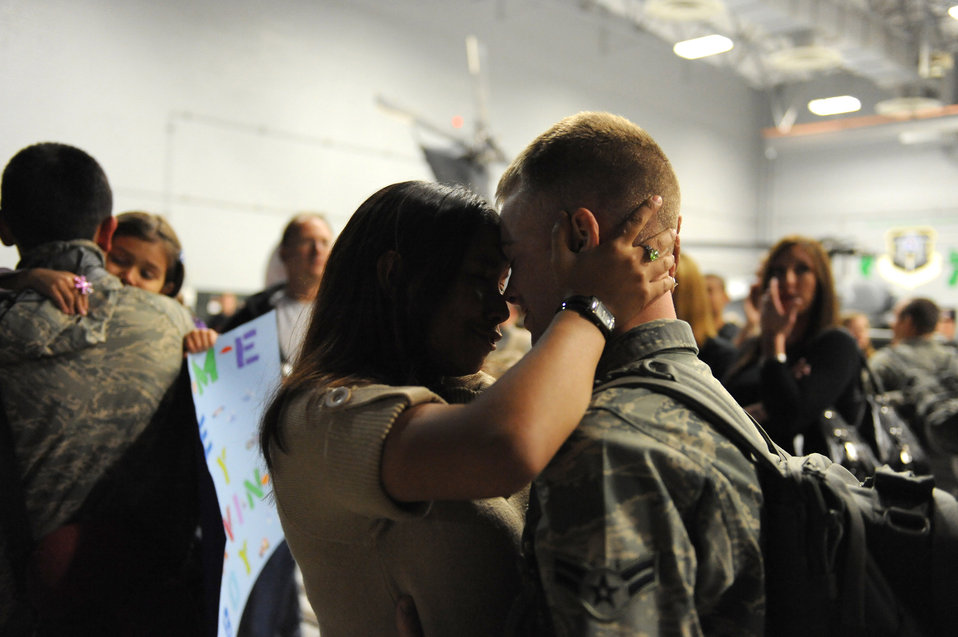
Home for the holidays

Airman 1st Class Daniel Rodgers embraces his wife, Airman 1st Class Stephanie Rubi, Dec. 6 at Nellis Air Force Base, Nev. Airmen with the 763rd Maintenance Squadron and 66th Rescue Squadron returned home after 3.5 months in Southwest Asia supporting the war on terrorism. He is an HH-60 avionics specialist assigned to the 763rd MXS and she is a still photographic apprentice assigned to the 99th Air Base Wing